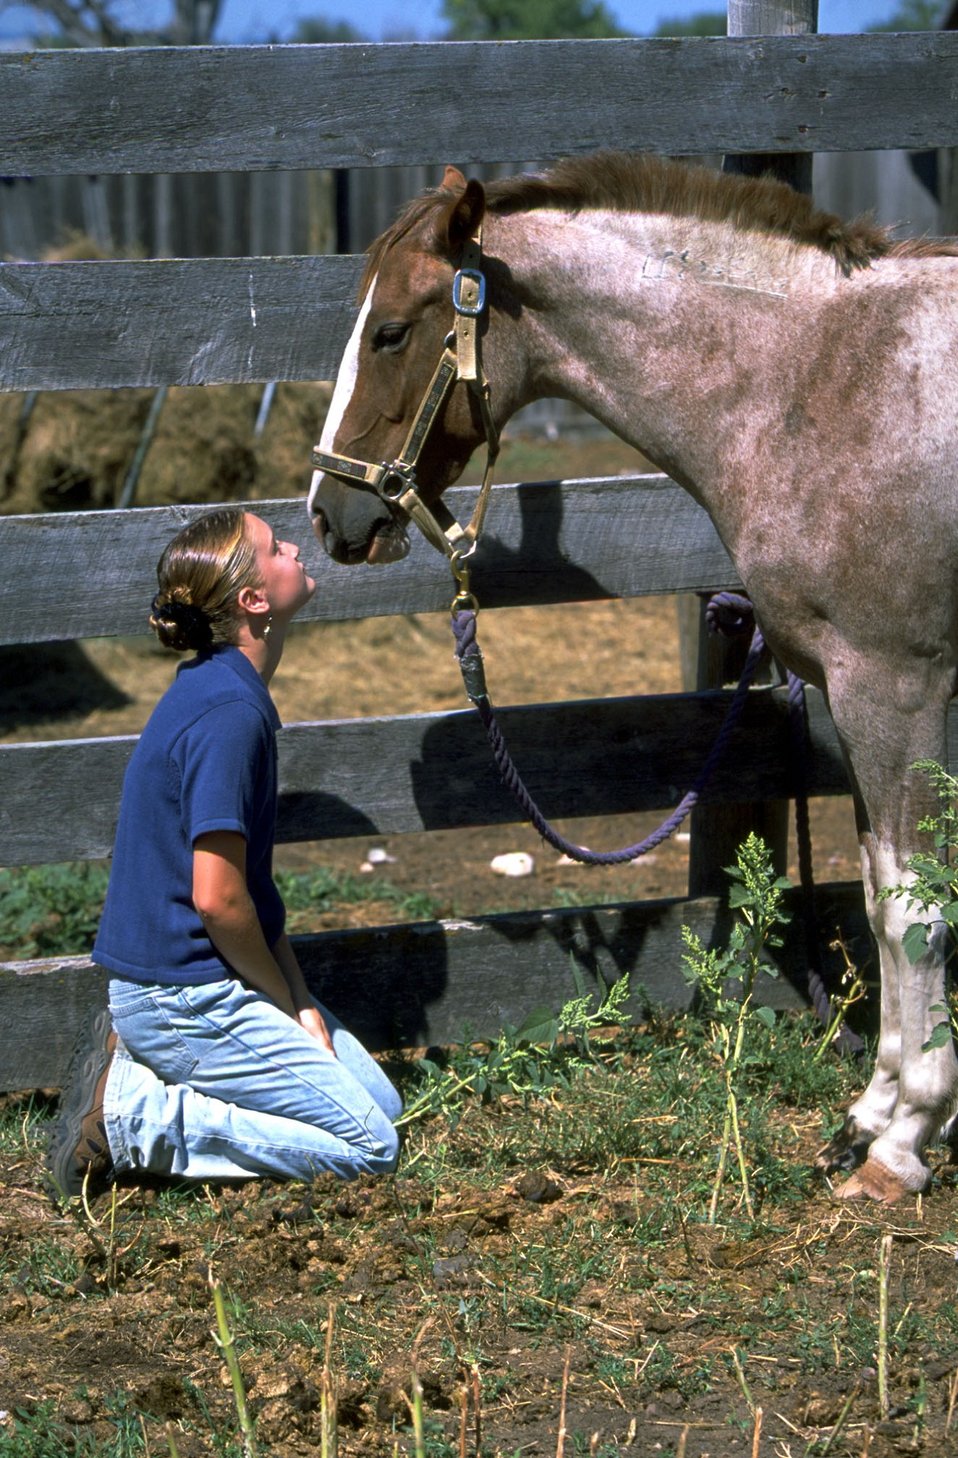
A Friend with an adopted Horse